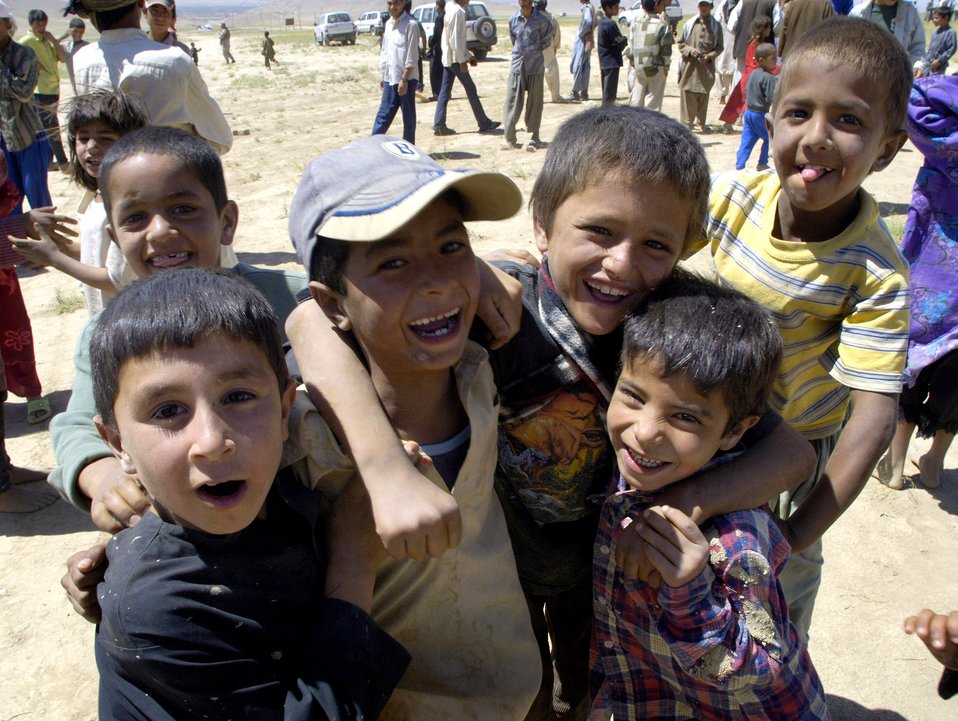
Happy feelings

A group of Afghan children greet volunteers July 27 at an Internal Displaced Persons camp outside of Kabul, Afghanistan. The contingent of volunteers from the Combined Security Transition Command-Afghanistan delivered donations sent from the United States.